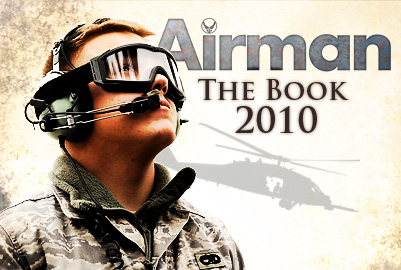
The Book 2010

Airman magazine's annual almanac issue available online.